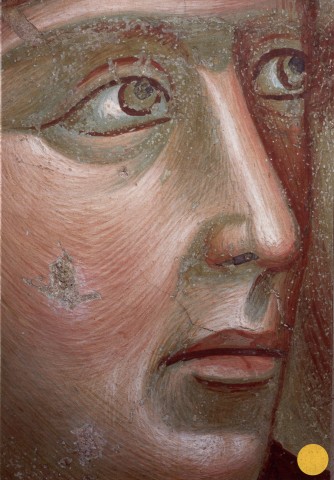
'giotto', rinuncia ai beni 06